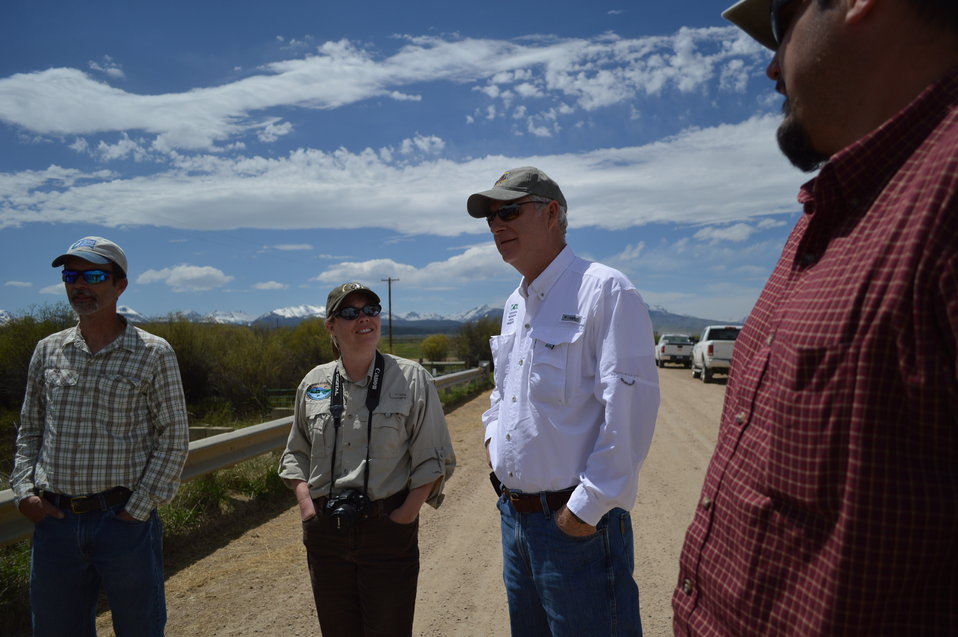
Regional Leadership Visit to Montana 2014